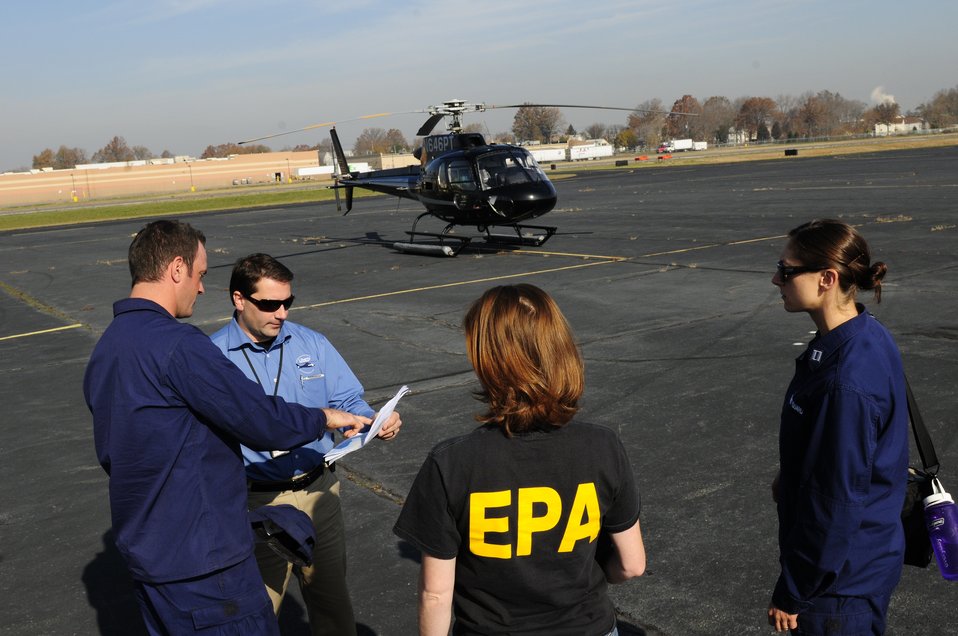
November 12, 2012 Over Flight of the Hudson River

EPA accompanied the US Coast Guard on an over flight of the Hudson River to determine locations for displaced fuel tanks and other hazardous debris.